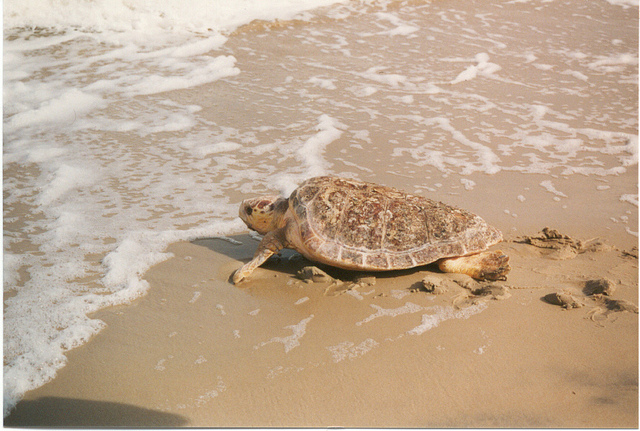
Loggerhead sea turtle at Back Bay National Wildlife Refuge.